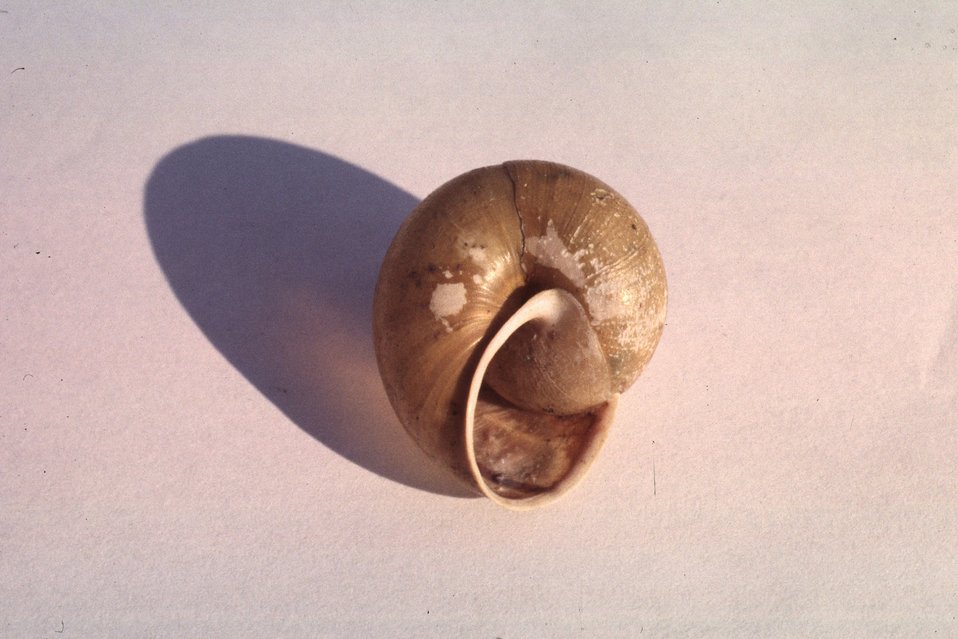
Klamath Shoulderband (Helminthoglypta talmadgei).